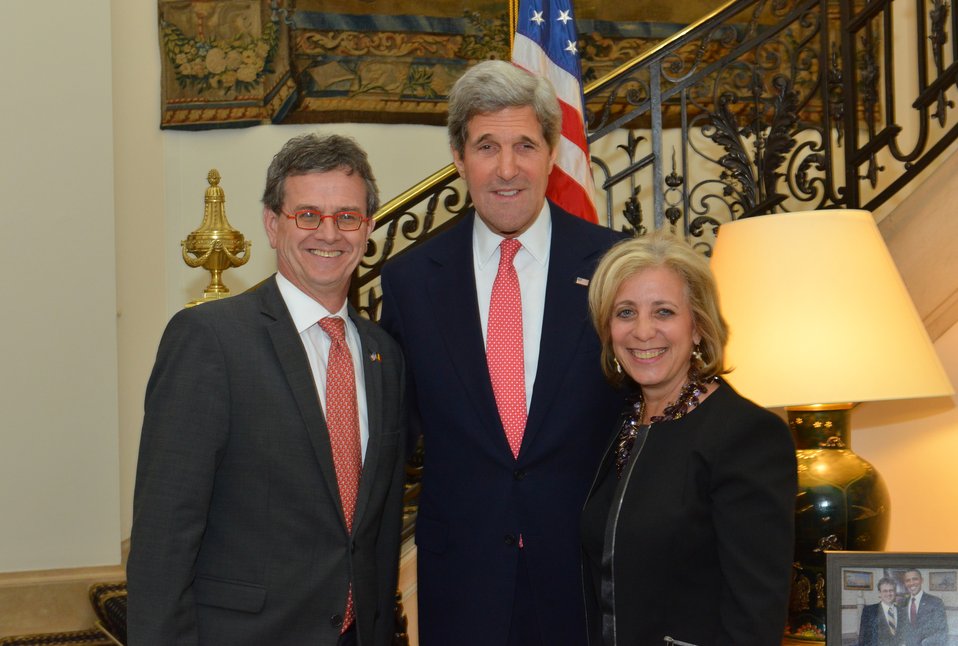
Secretary Kerry With Ambassador Gutman and Dr. Loewinger

U.S. Secretary of State John Kerry smiles for the camera with U.S. Ambassador to Belgium Howard Gutman and his wife, Dr. Michelle Loewinger, at the Ambassador's residence in Brussels, Belgium, on April 22, 2013.